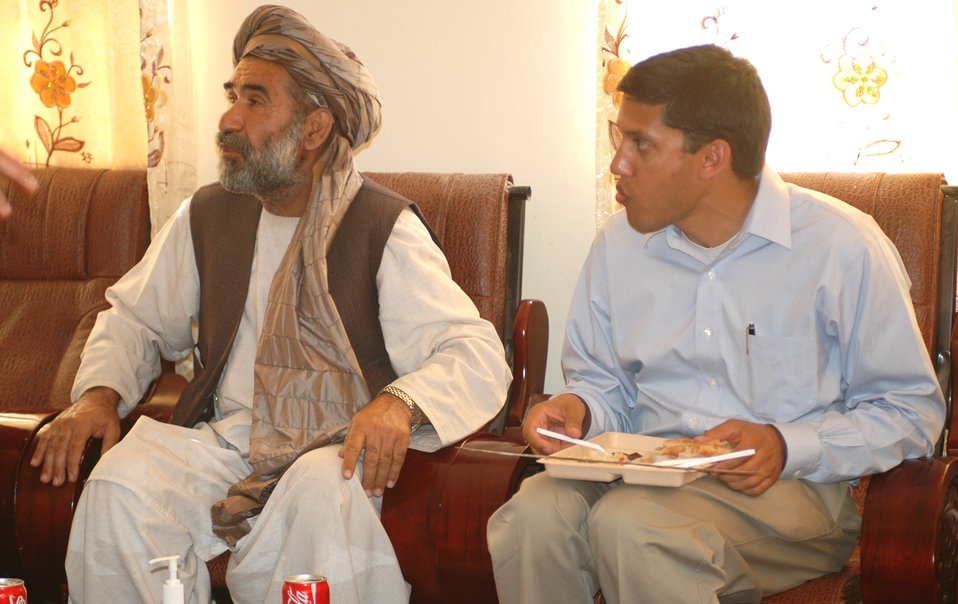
Dr Shah Visits Nangarhar April 10, 2010